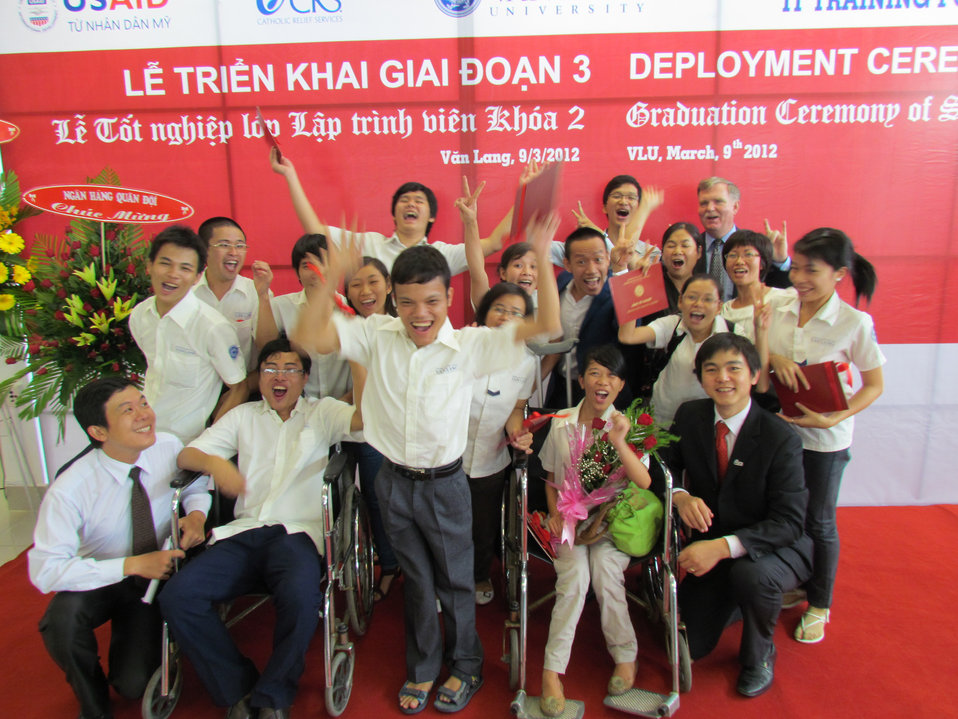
Graduates receive certificates in IT from a USAID-funded training program at Van Lang University, HCMC